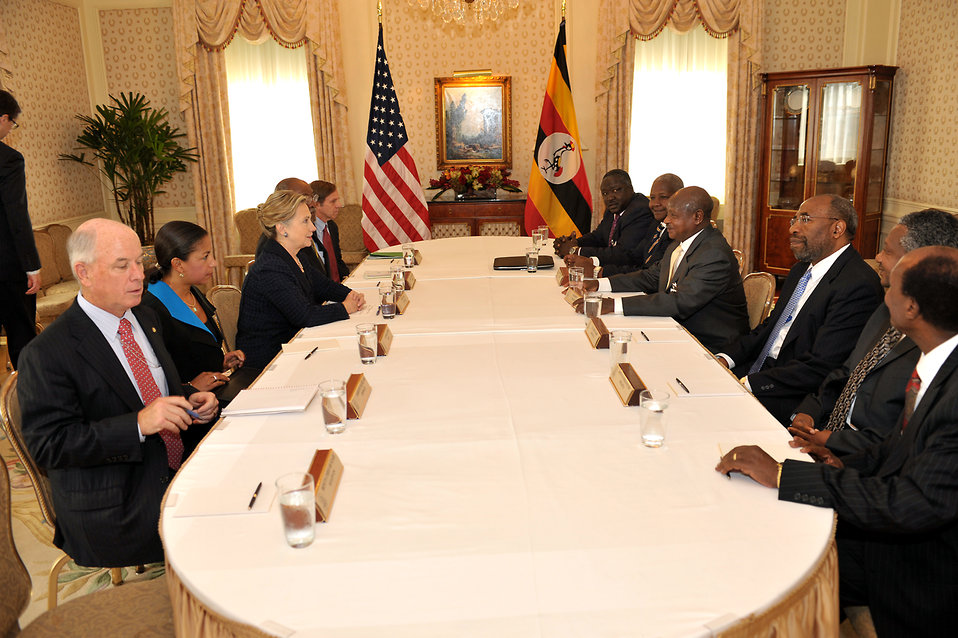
Secretary Clinton Holds a Bilateral With Ugandan President Museveni

U.S. Secretary of State Hillary Rodham Clinton holds a bilateral meeting with Ugandan President Yoweri Museveni at the Waldorf-Astoria Hotel in New York, New York, on September 24, 2010. The Secretary is accompanied by U.S. Assistant Secretary of State Philip J. Crowley (top left), U.S. Permanent Representative to the United Nations Susan Rice (sitting on the immediate right of the Secretary), and U.S. Assistant Secretary of State for African Affairs Johnnie Carson (sitting on the Secretary's immediate left).